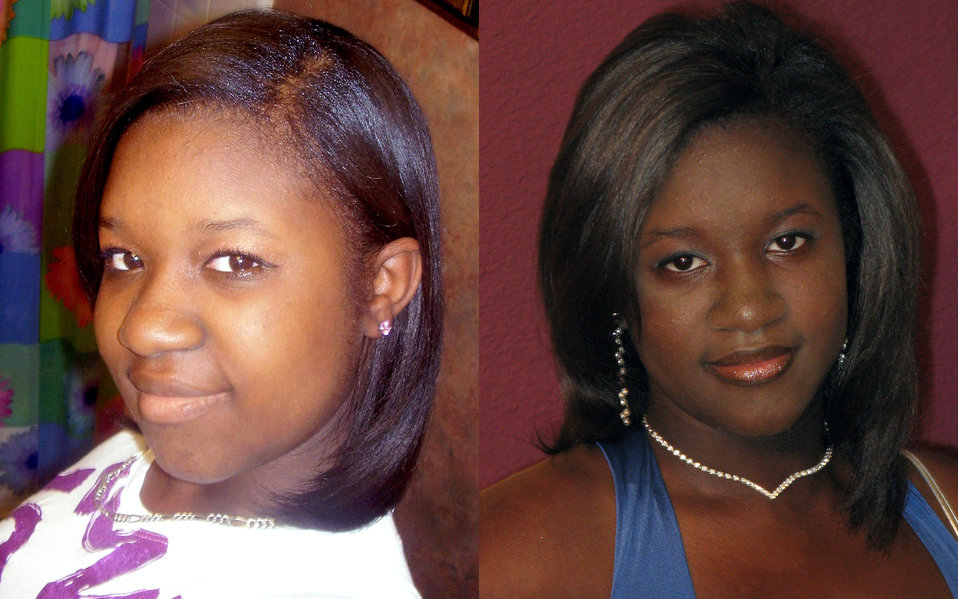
Air Force doctor's persistence leads to diagnosis of rare disease

These images show Lakeshia Blueitt's pigment changes. Lakeshia is a 17-year-old patient who was diagnosed with type B insulin resistance at Wilford Hall Medical Center Pediatric Endocrinology Clinic on Lackland Air Force Base, Texas. The photo on the left was taken in January, the photo on the right was taken in October.